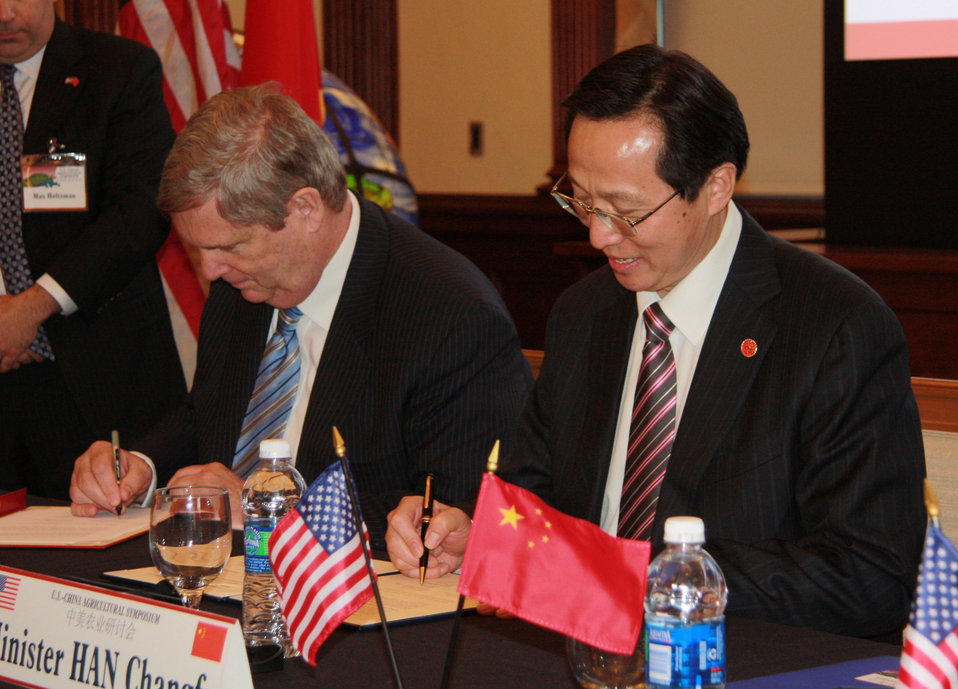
Agriculture Secretary Tom Vilsack and China's Minister of Agriculture Han Changfu today signed an historic Plan of Strategic Cooperation that will guide the two countries' agricultural relationship for the next 5 years. The plan was signed as part of the U.S.-China Agricultural Symposium held at the World Food Prize Hall of Laureates, Des Moines, IA, on Thursday, February 16, 2012. The symposium focused on bilateral cooperation in the areas of food safety, food security and sustainable agriculture, as well as enhanced business relationships between the two countries.